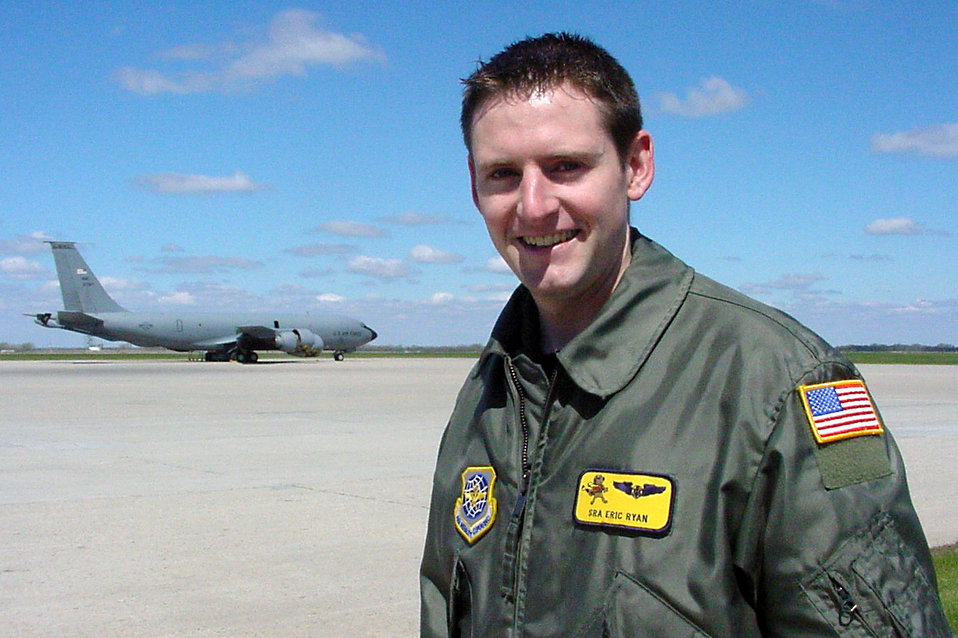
An acting boom operator

GRAND FORKS AIR FORCE BASE, N.D. -- Senior Airman Eric Ryan has been deployed supporting operations Iraqi Freedom and Enduring Freedom, as well as many other operations as part of his job as a boom operator. In his free time, Airman Ryan pursues his love of acting. He is assigned to the 906th Air Refueling Squadron here.